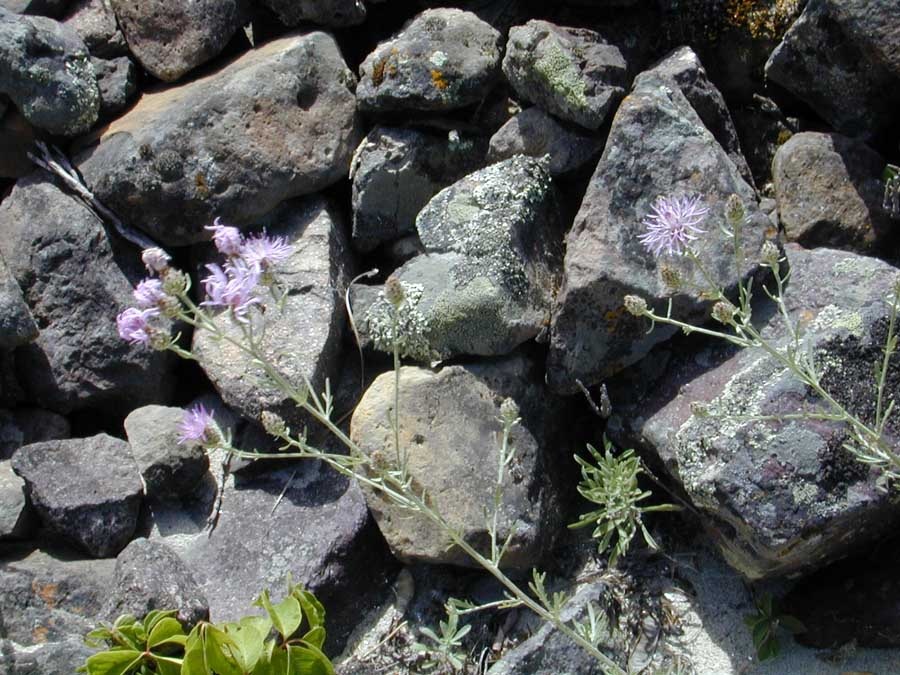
Rush Skeleton Weed Idaho vegetation Plants in BLM